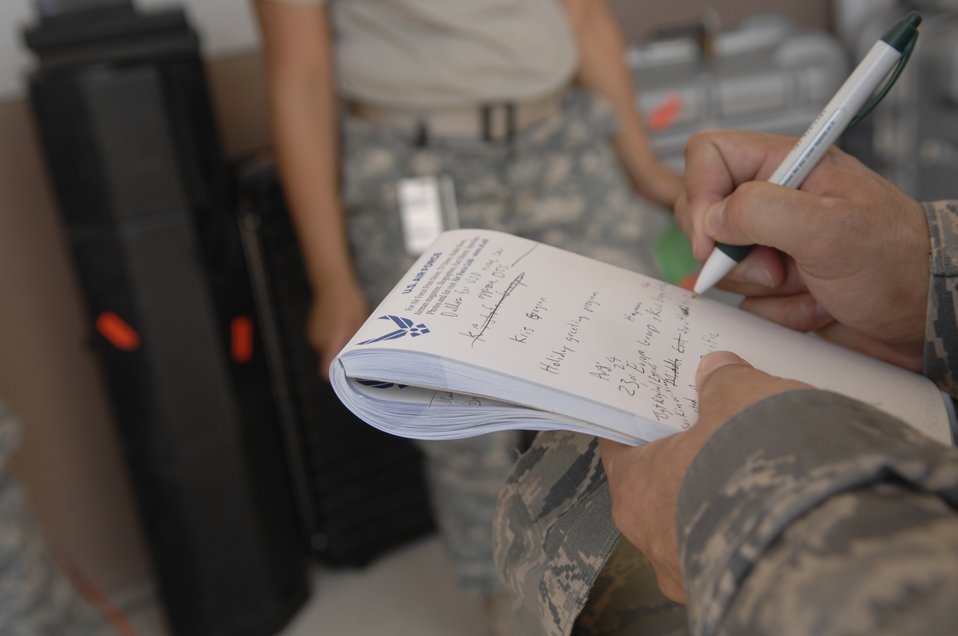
Hometown News Holiday Greets prepare for trip

A member of the Hometown Holiday Greets teams takes notes before the 45-day trip across the world. Three teams from the Air Force News Agency in San Antonio are dedicated to filming servicemembers across the globe in an effort to bring them closer to their families back home.